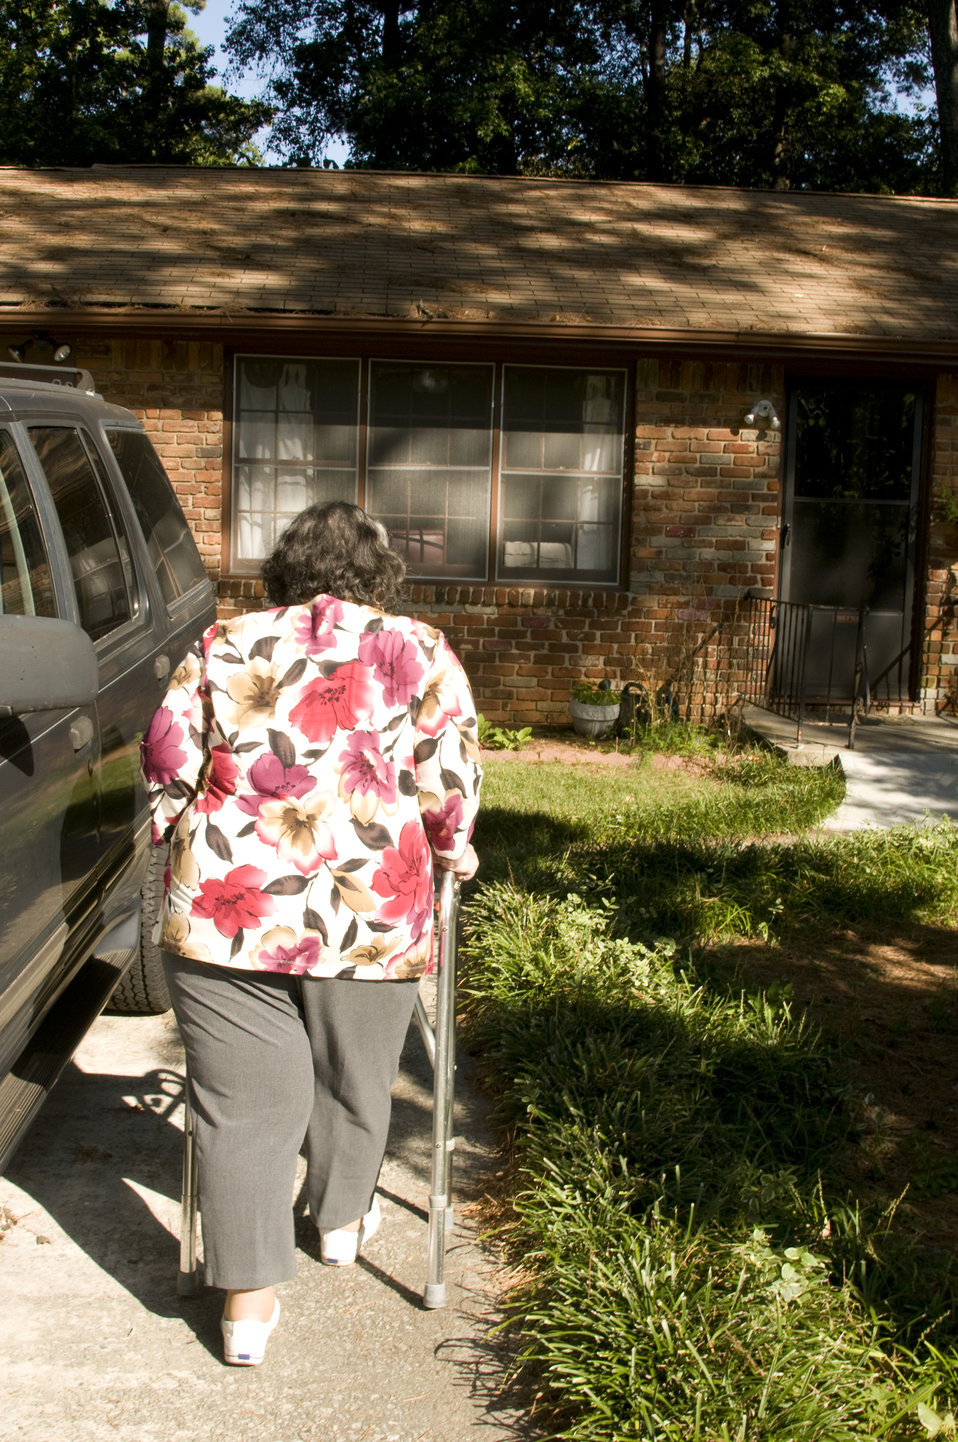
The woman pictured here is a rheumatoid arthritis patient, and is living with this disease, still doing her best to carry on with her day to day activities. With the help of her walker, she was shown retrieving her mail having gathered the mailings form the street-side mailbox. At this point she was headed back to the front door of her Georgian home.